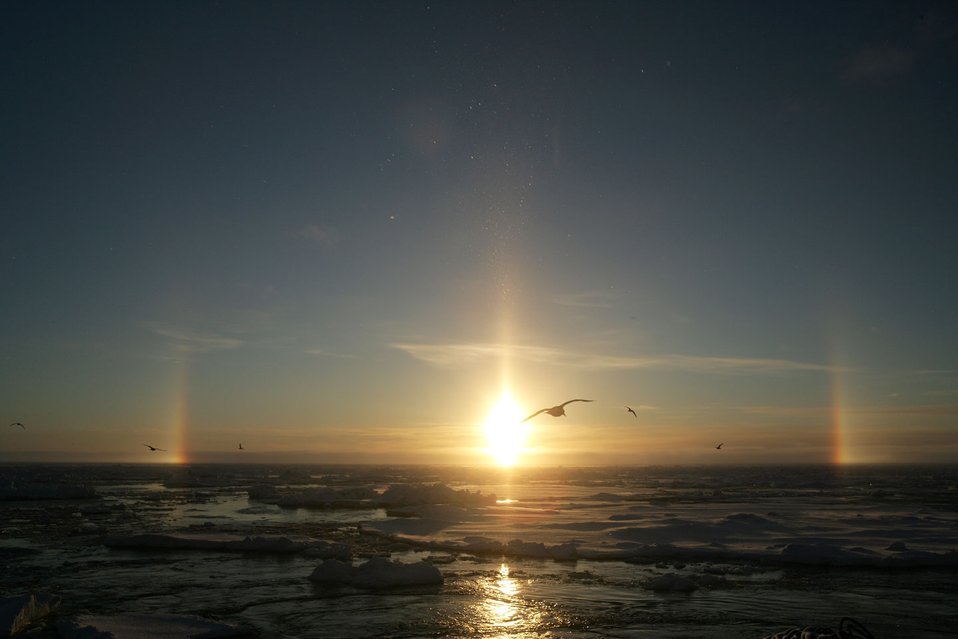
Sun dogs and pillar - atmosphere phenomenom caused by refraction of sunlight through ice crystals in the atmosphere.